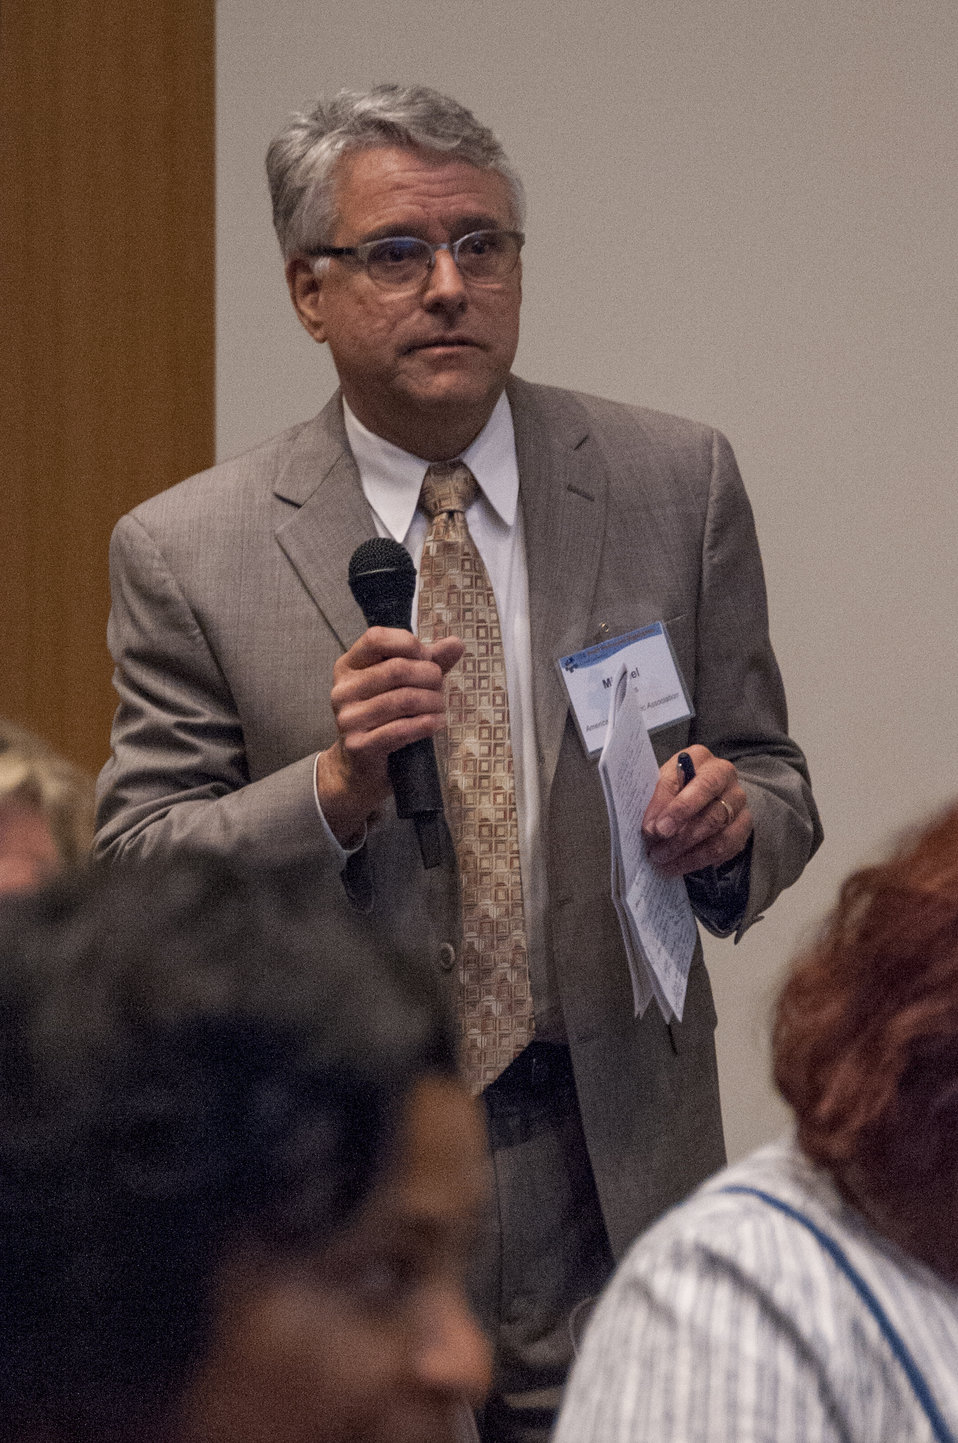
FDA's 2014 Health Professional Organizations Conference (1131)

May 14, 2014; Michael Duenas, The American Optometric Association (AOA) Chief Public Health Officer, attended FDA's third annual Health Professional Organizations Conference, where some of the agency’s most senior leaders exchanged views and discussed issues of mutual interest with senior representatives from key health professional organizations. To learn more, go to FDA Voice.

This photo is free of all copyright restrictions and available for use and redistribution without permission. Credit to the U.S. Food and Drug Administration is appreciated but not required.

Privacy and use information: www.flickr.com/people/fdaphotos/